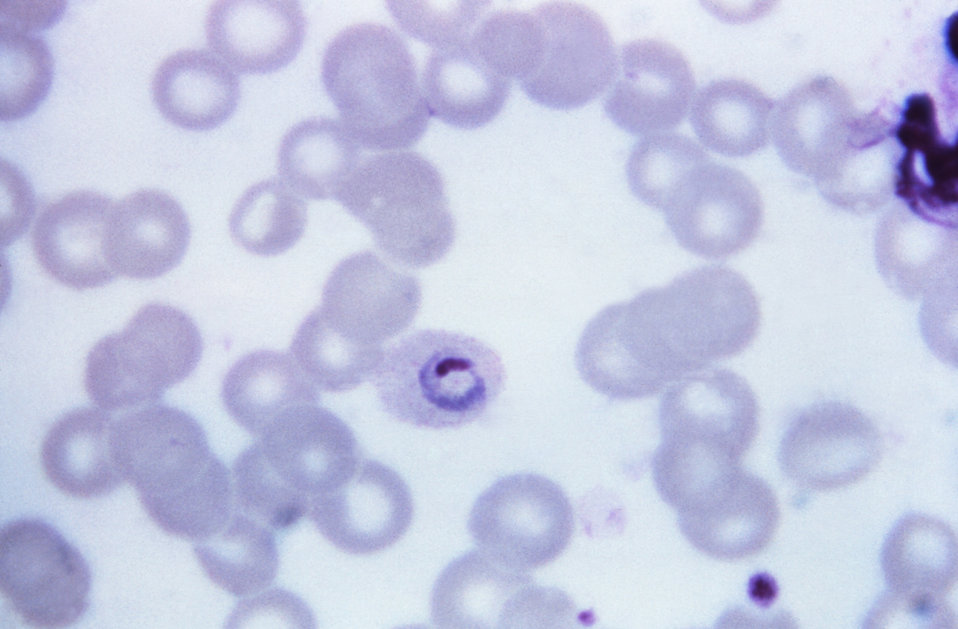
This thin film Giemsa stained micrograph depicts a young, growing Plasmodium ovale trophozoite.